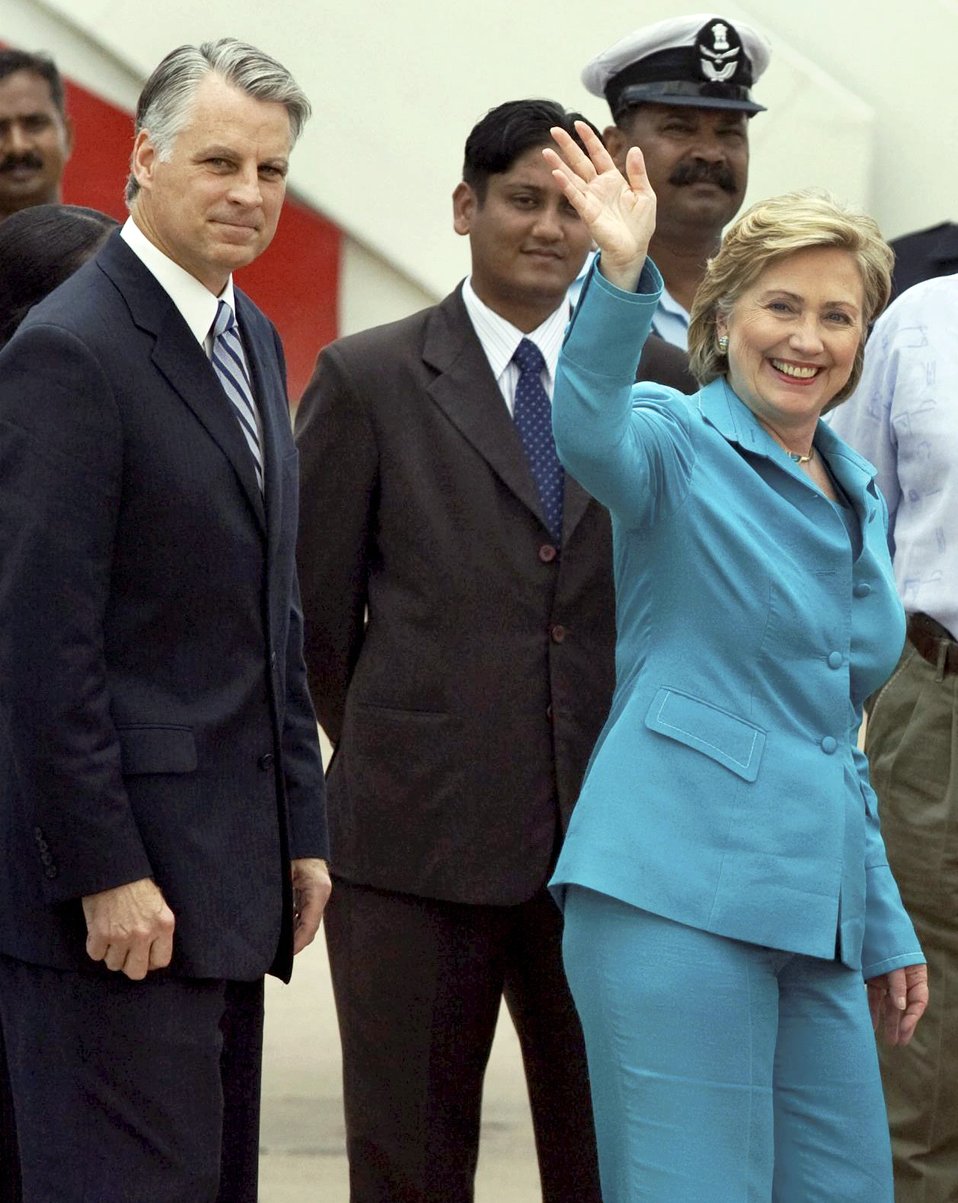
Secretary Clinton Arrives in New Delhi

U.S. Secretary of State Hillary Rodham Clinton waves upon her arrival at New Delhi airport in New Delhi, India July 19, 2009. U.S. Ambassador-Designate Timothy J. Roemer is at left.